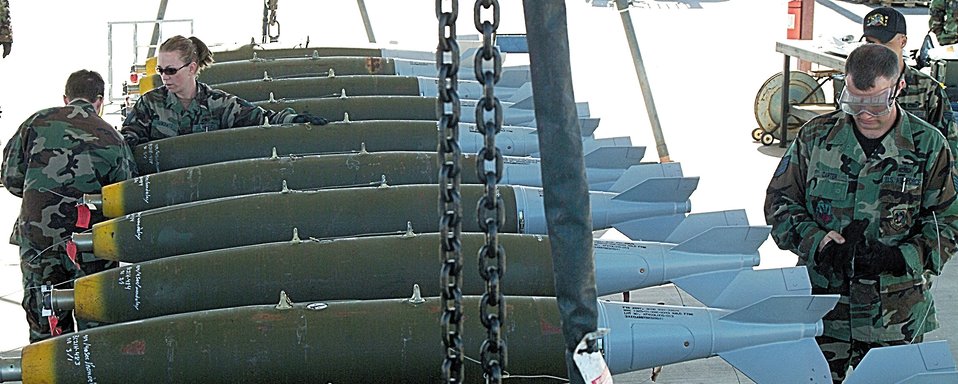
Missouri fighter wing goes to wild, wild west

In the Davis-Monthan Air Force Base's munitions storage area, 442nd Maintenance Squadron munitions Airmen from Whiteman Air Force Base, Mo. build 500-pound bombs for the pilots to drop at western Arizona's Barry M. Goldwater Range near Gila Bend. Reservists from the 442nd Fighter Wing deployed to Arizona to practice employing live munitions.